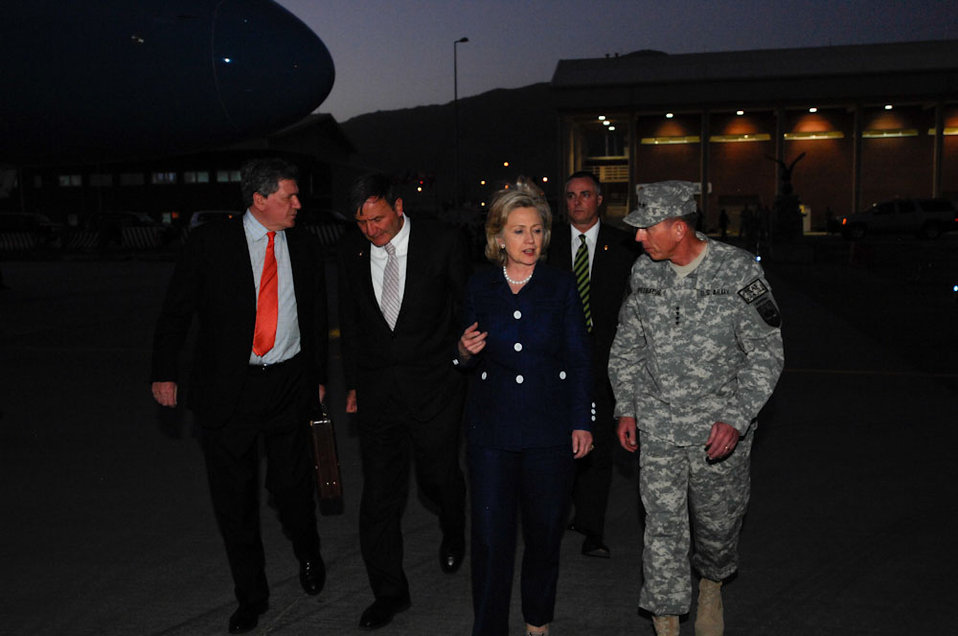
Special Representative Holbrooke, Ambassador Eikenberry, Secretary Clinton, and General Petraeus Speak

U.S. Special Representative for Afghanistan and Pakistan Richard C. Holbrooke and U.S. Ambassador to Afghanistan Karl Eikenberry, U.S. Secretary of State Hillary Rodham Clinton, and Commander of the NATO International Security Assistance Force (ISAF) and Commander of U.S. Forces Afghanistan (USFOR-A) (right) speak in Kabul, Afghanistan, on July 19, 2010.